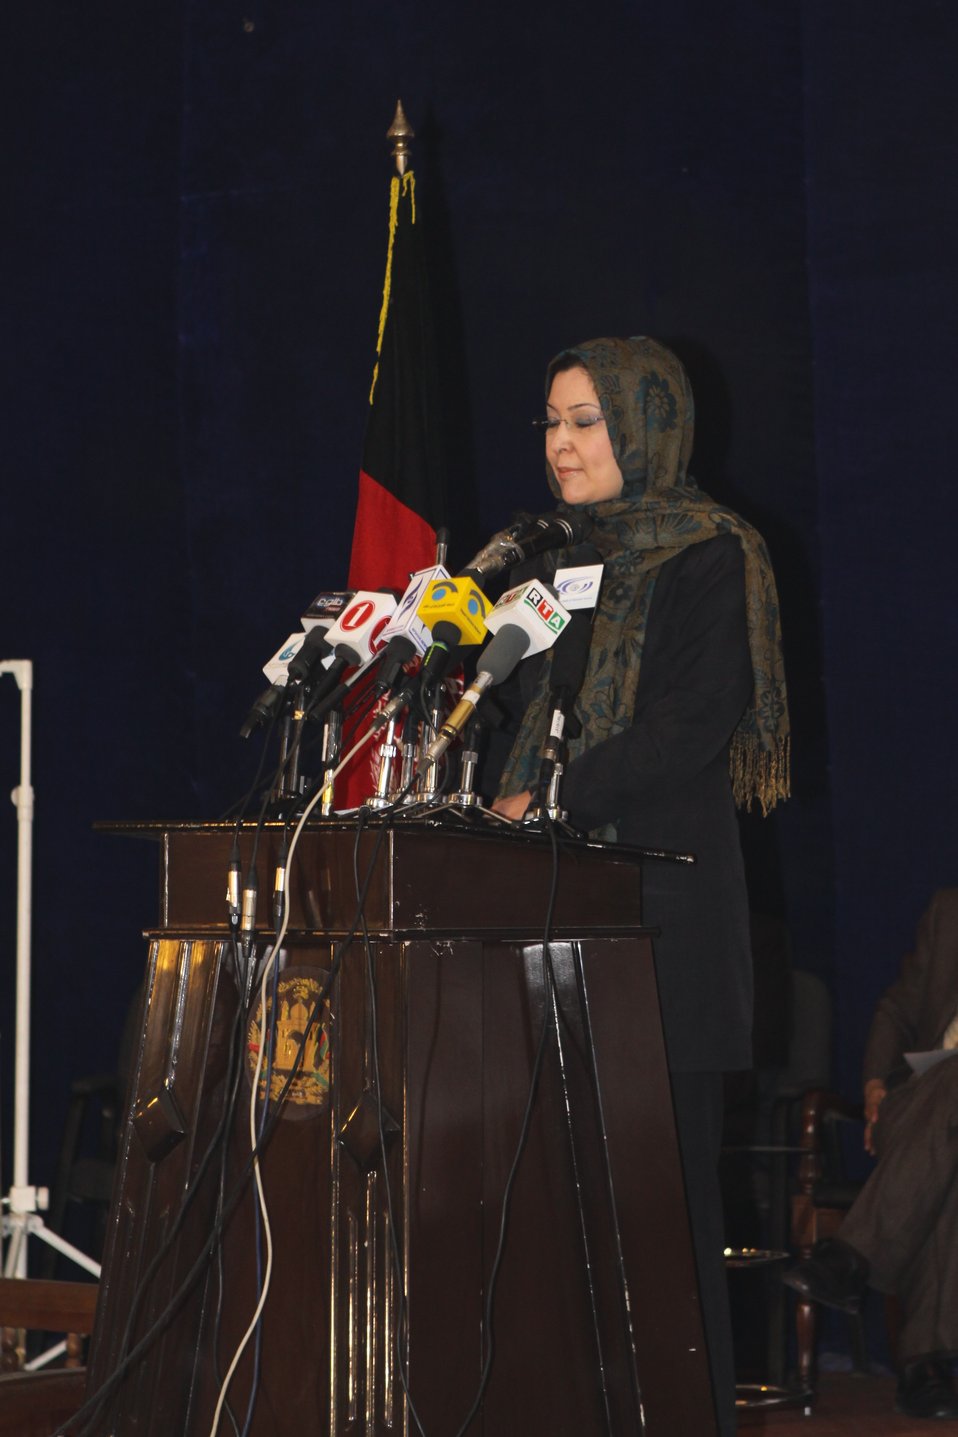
Community Health Workers Celebrated

Kabul, Afghanistan | December 5, 2010 — In support of the United Nations designated International Volunteer Day for Economic and Social Development, Afghanistan’s Ministry of Public Health celebrated its annual Community Health Worker Day today. Acting Minister of Public Health Dr. Suraya Dalil, USAID Senior Deputy Mission Director Robert Hellyer, other government officials, and international donors joined in recognizing the critical contribution of community health workers in Afghanistan and encouraging them to continue their voluntary support to their communities.
The event praised the contributions of the more than 22,000 volunteers throughout the country who deliver community level health-education, counseling, and services out of village health posts located in private homes. The Ministry of Public Health envisioned that community-based healthcare programs will actively encourage communities and families to adopt healthy lifestyles and behaviors, and provide families access to high quality and socially acceptable preventative medicine and life-saving services.
“We have 22,000 community health workers in Afghanistan that are able to implement the basic and standard medicines. They all have been trained through a job description,” said Minister Dalil. Addressing the health workers, she added, “I am proud and feel powerful that I have people like you.”
USAID-funded health projects collaborate closely with the Ministry of Public Health to improve the health and nutritional status of Afghans, provide quality primary healthcare, and promote healthy behaviors at the community and household-levels. USAID supported the training of more than 9,000 of the volunteer community health workers currently working in Afghanistan.
“On behalf of the American people, I congratulate the Community Health Workers for their diligence to gain the skills and knowledge necessary to serve their communities in this important role,” said USAID Senior Deputy Mission Director Hellyer. “USAID strongly supports community based health care and believes that quality community-based health services are essential to reaching Afghanistan’s Millennium Development Goals.”
To support the Basic Package of Health Services, USAID assisted in developing the community health worker training manual, helped train community health worker supervisors and master-trainers, facilitated in-service training, and produced and developed reporting tools, job aids, and education materials.